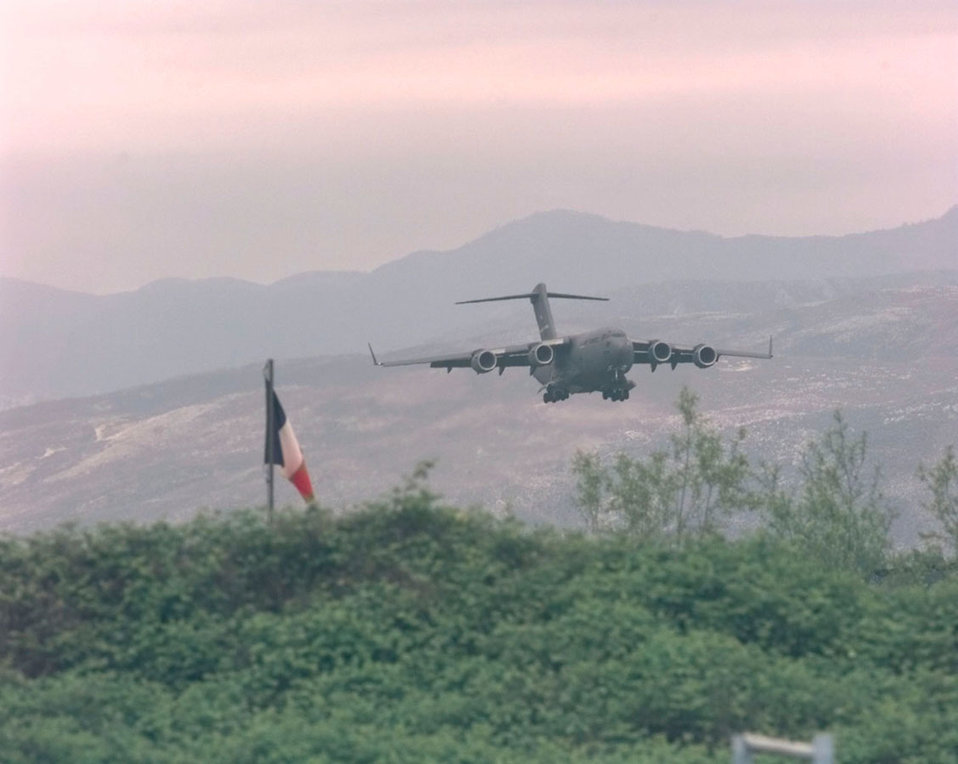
Final approach

TIRANA, Albania -- A Charleston C-17 makes its final aproach to Rinas Airport. Flightline operations continue around the clock at Operation Shining Hope and NATO Operation Allied Force.